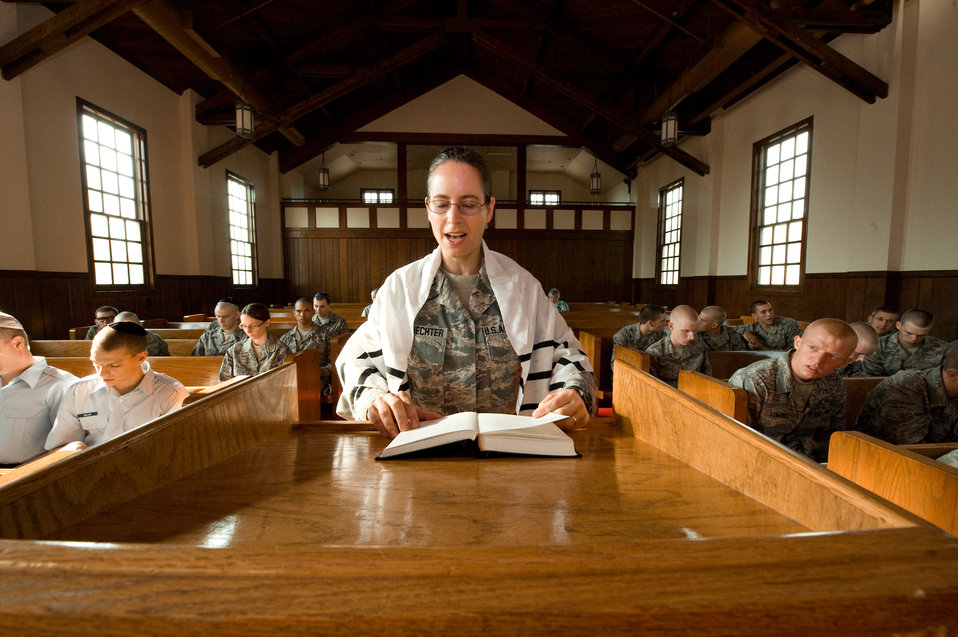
U.S. Air Force Chaplaincy

U.S. Air Force Rabbi, Chaplain, Captain Sarah D. Schechter (standing and wearing a tallit, prayer shawl) leads the evening le'il shabbat service on Friday, Sept. 4, 2009 at Lackland Air Force Base's Airmen Memorial Chapel. The more than 25 basic military trainees and other attendees participated in a religious education class, then Ma'ariv prayer service for the setting of the sun, followed by a meal provided by lay leaders supporting the service. Because of training schedules some ceremonies and events are earlier than traditionally held. By order of commanders, those who want to attend any or all religious services of their choosing are given full permission and opportunity to do so. Chaplain, Captain Schechter is an Operation Iraqi Freedom veteran and considers her deployment there to be one of the highlights of her career. Schechter is the first woman rabbi in the U.S. Air Force.